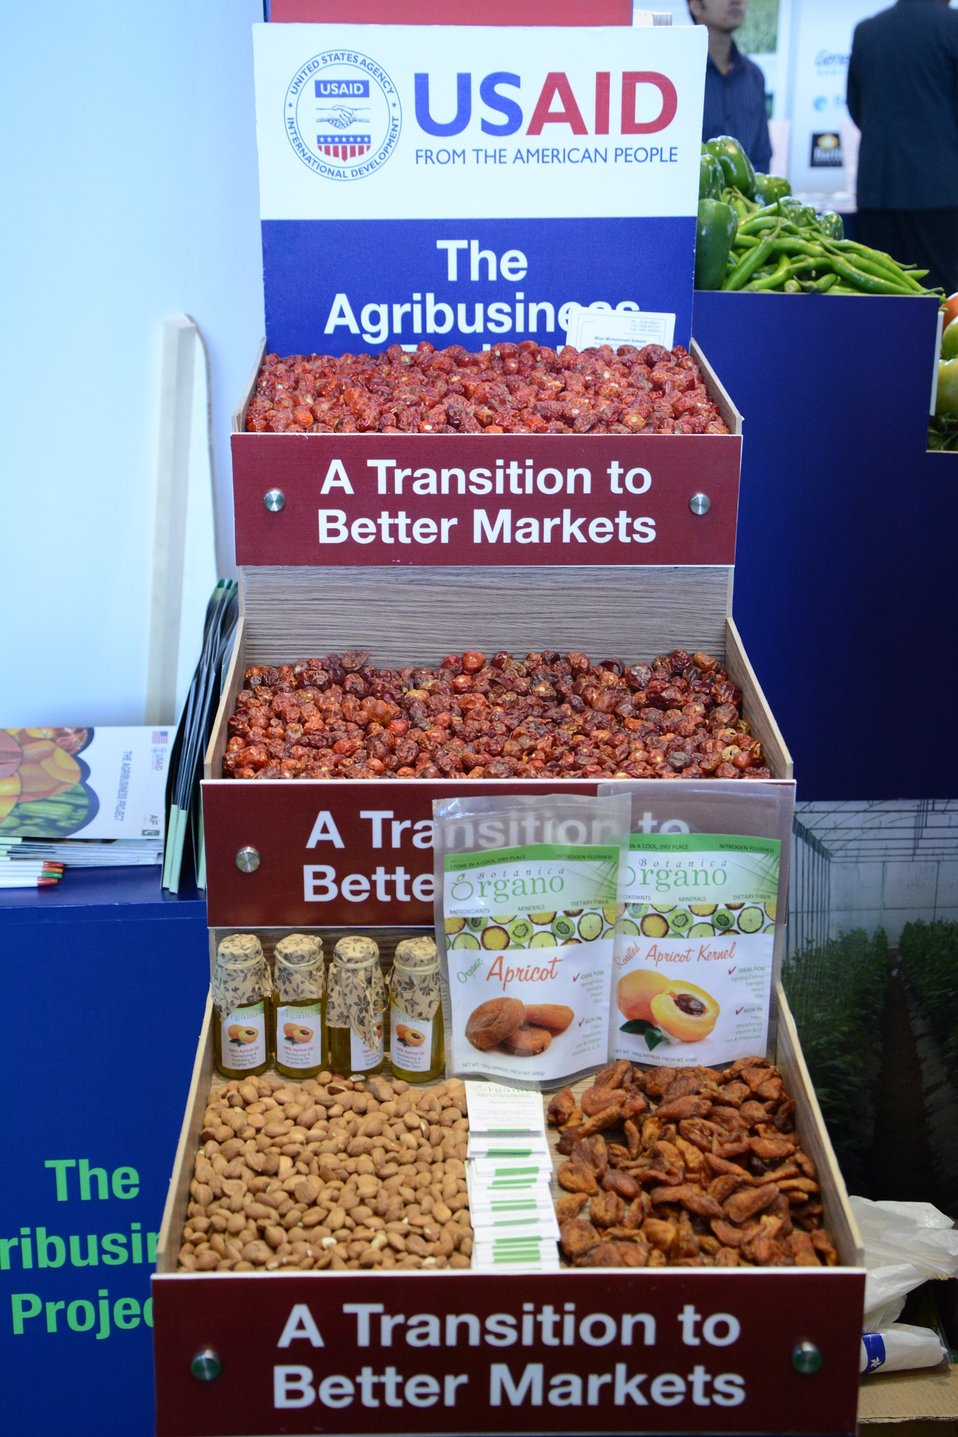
TAP11